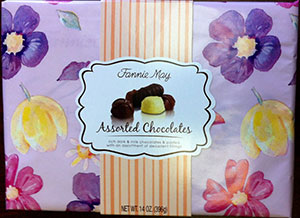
Food Safety, Allergen

March 17, 2014 – Product Recall – Fannie May Issues a Voluntary Recall of 89.08 Cases of 14.0 oz. Spring Wrapped Assorted Chocolate Box Due to Undeclared Peanuts.